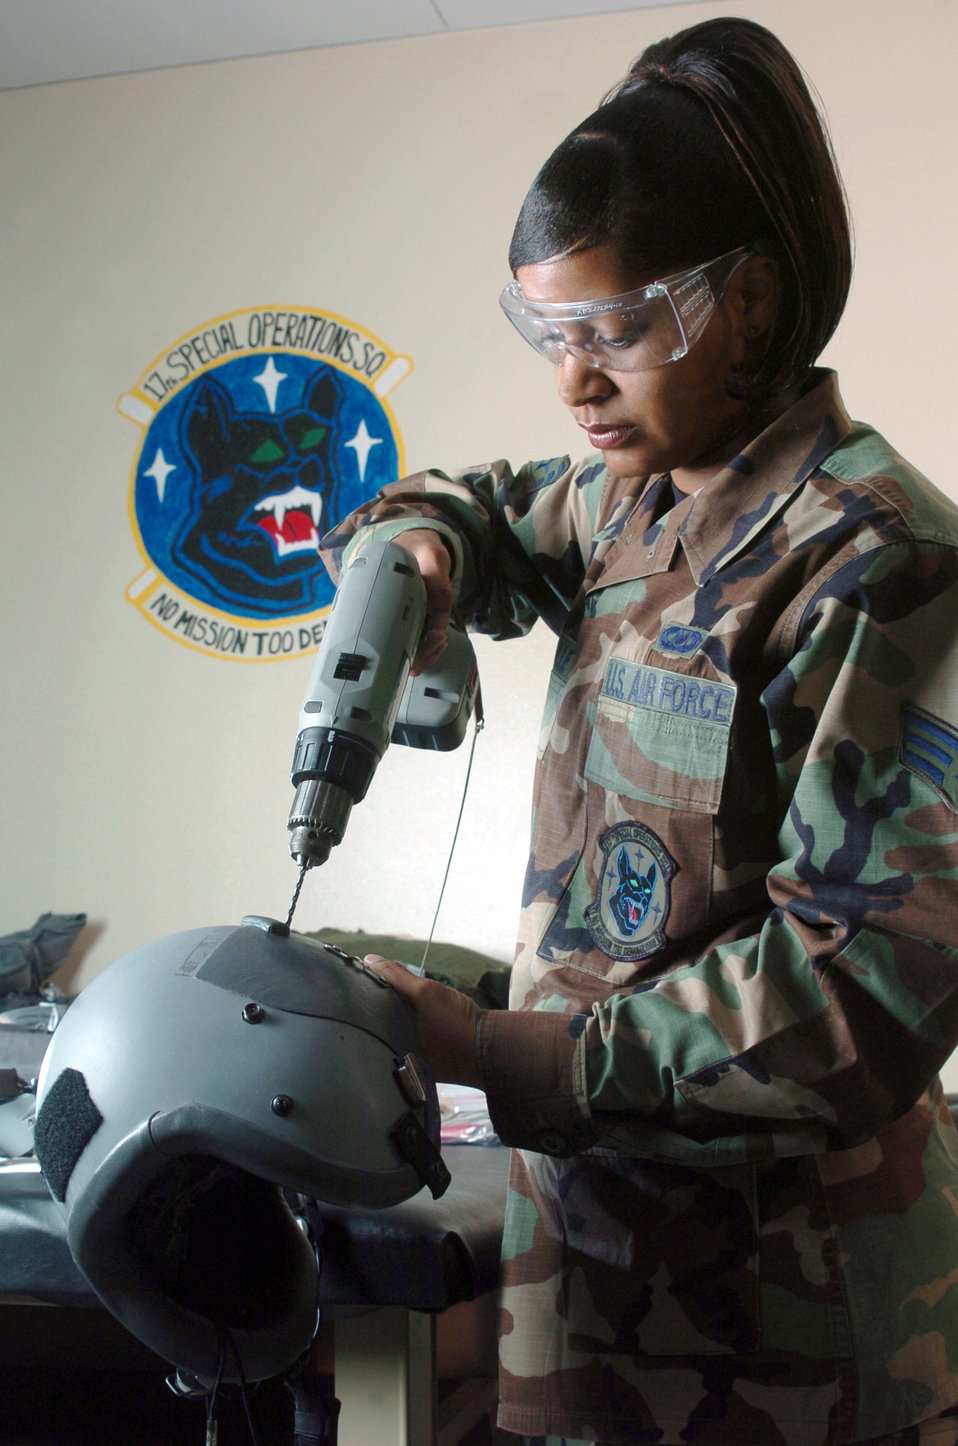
Life-support Airmen offer keys to survival

KADENA AIR BASE, Japan -- Senior Airman Patrina Fonville drills holes in a helmet to install bayonet receivers and a night-vision goggle mount. She is a life-support technician with the 17th Special Operations Squadron here.